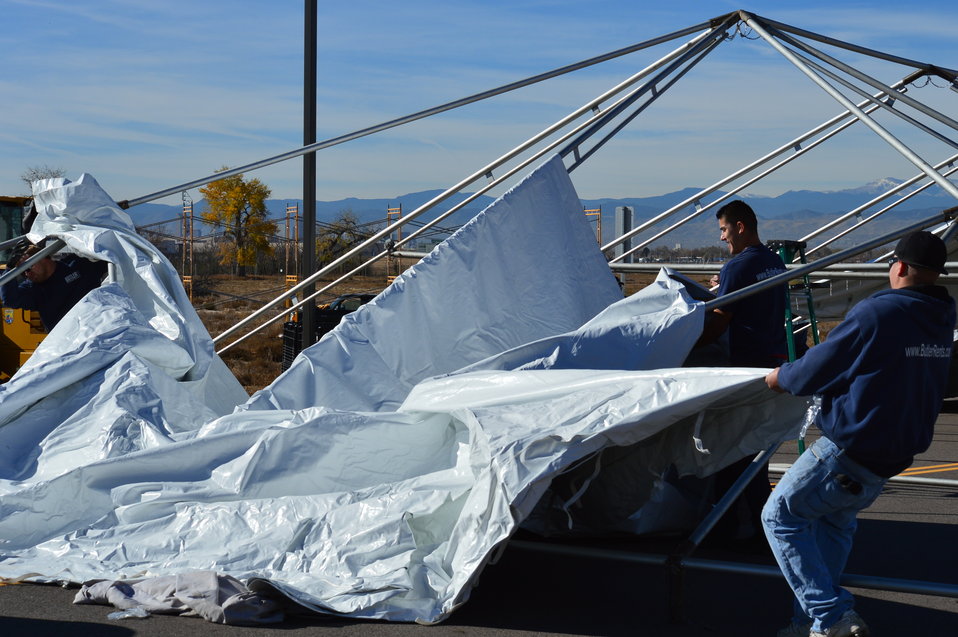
Tent setup next to crusher.